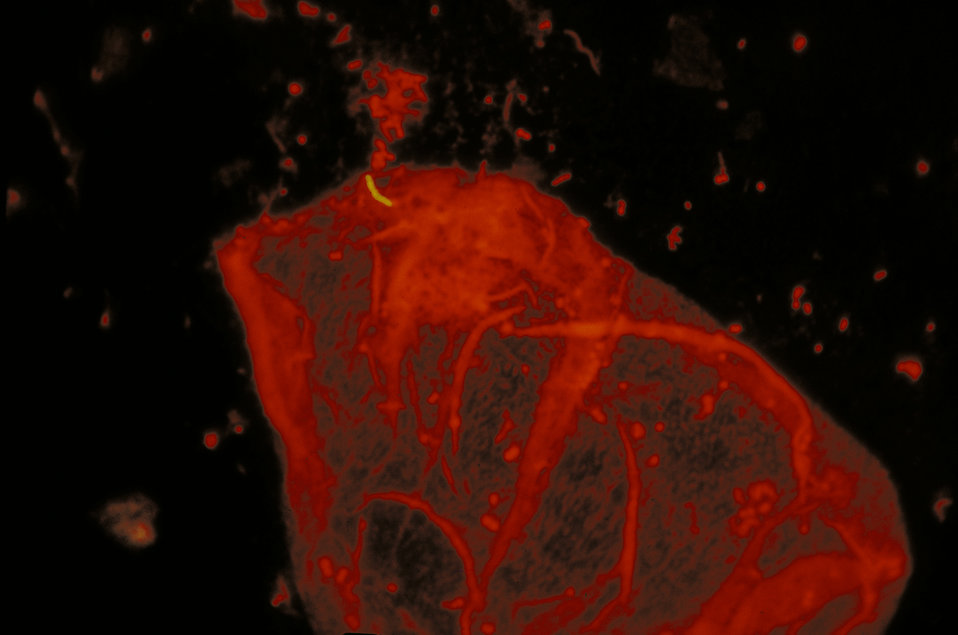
Mycobacterium tuberculosis in a sputum smear is stained using fluorescent auramine with acridine orange counterstain.